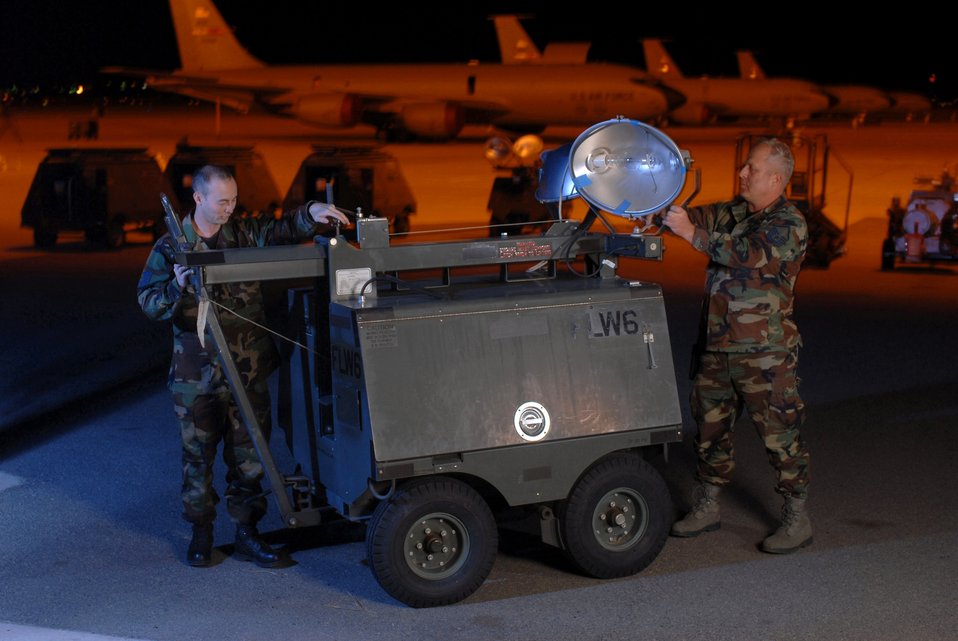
AGE makes a difference

Tech. Sgt. Tom Wilson (left) and Master Sgt. Tom Maple inspect lighting equipment Dec. 5 at March Air Reserve Base, Calif. Both are aircraft generation equipment technicans from the 452nd Maintenance Squadron and air Reserve technicians here. Air Reserve technicians are full-time civilian employees of the Air Force who must maintain active status as reservists in the Air Force Reserve unit in which they are employed. They are permanent employees who, in the event of mobilization, are available for active duty in their assigned military position. They are essential for the operational readiness of their Reserve unit. In the background are KC-135 Stratotankers from the 336th Air Refueling Squadron.